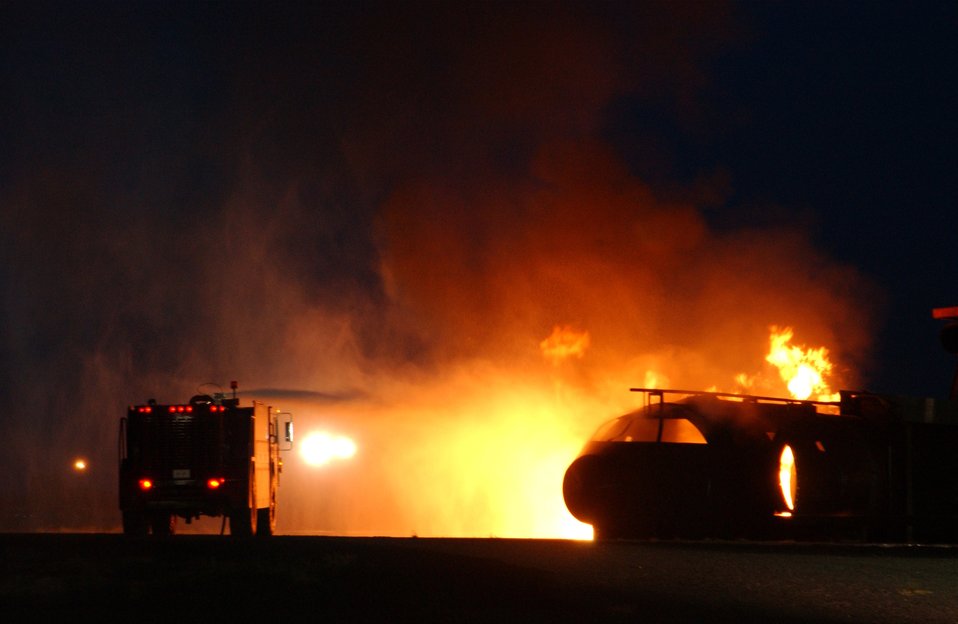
Fire training

FAIRCHILD AIR FORCE BASE, Wash. - One of the base fire engines attacks a ground fire during training here recently. Real world fire training is conducted several times a month to ensure firefighters are prepared to respond to any type of fire incident. The firefighters are assigned to the 92nd Civil Engineer Squadron.